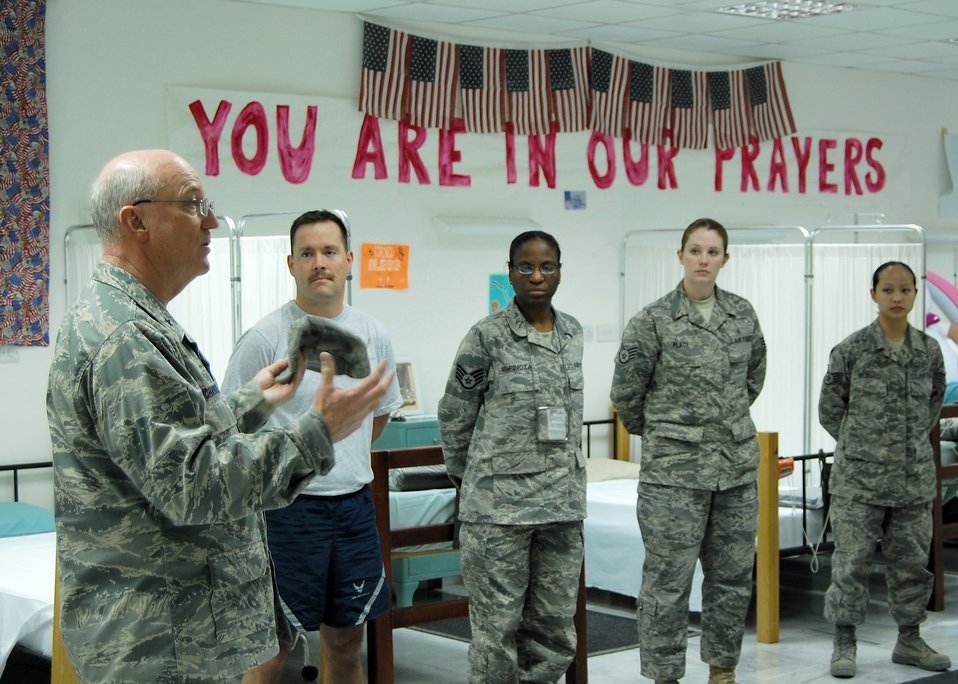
Chaplain brings spiritual message to deployed Airmen

Chaplain (Brig. Gen.) Cecil R. Richardson speaks to Airmen deployed to the 386th Medical Group's Contingency Aeromedical Staging Facility during his visit to the 386th Air Expeditionary Wing March 18 at a Southwest Asia air base. The Air Force deputy chief of chaplains traveled to the wing to visit deployed Airmen and participate as the guest speaker at the wing's National Prayer Breakfast.